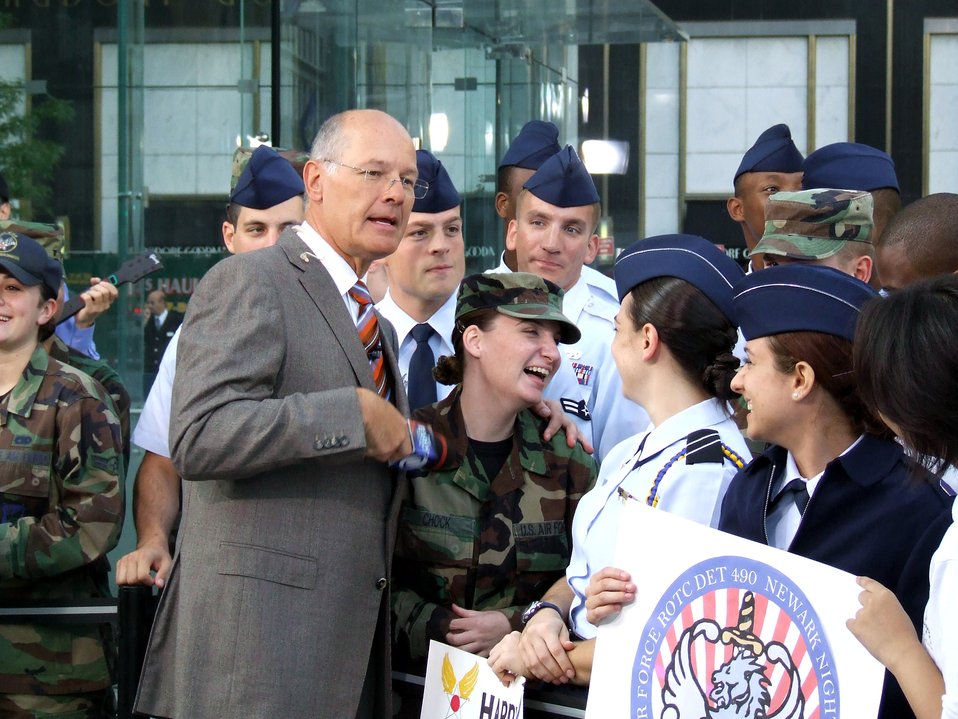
CBS' 'The Early Show' recognizes AF 60th anniversary

Anchor Harry Smith from CBS'